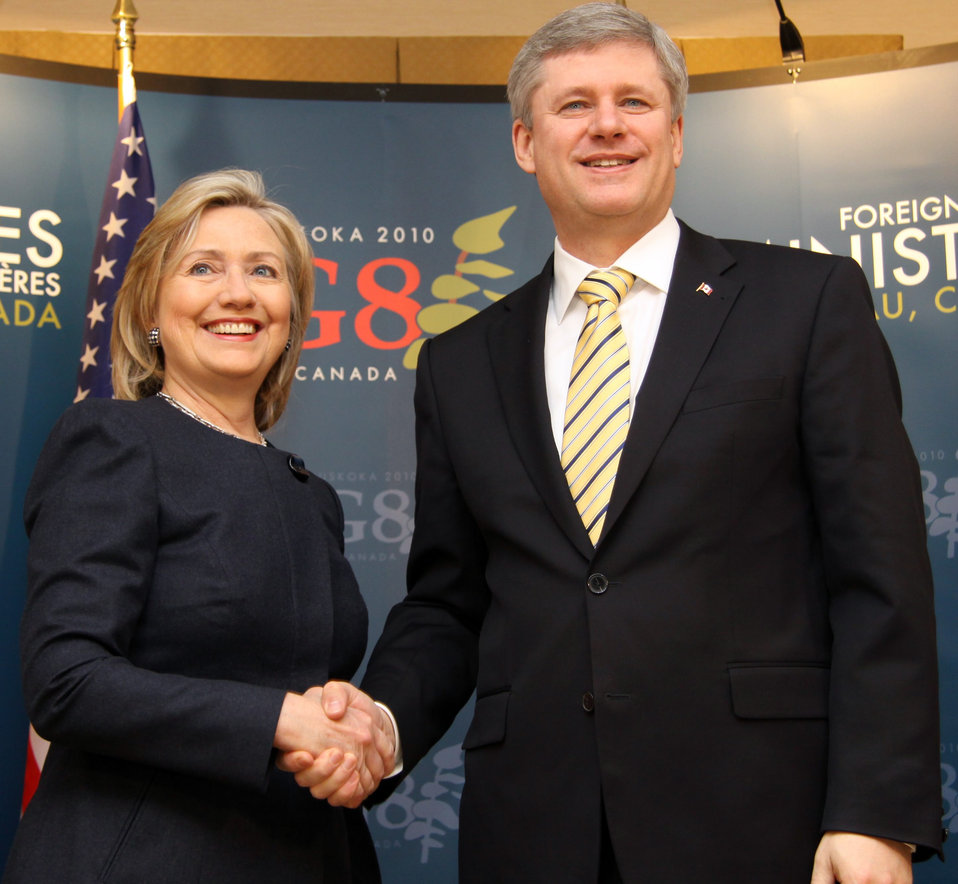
Secretary Clinton Meets With Canadian Prime Minister

U.S. Secretary of State Hillary Rodham Clinton meets with Canadian Prime Minister Stephen Harper during the G8 Foreign Ministers Meeting in Ottawa, Canada March 29, 2010.